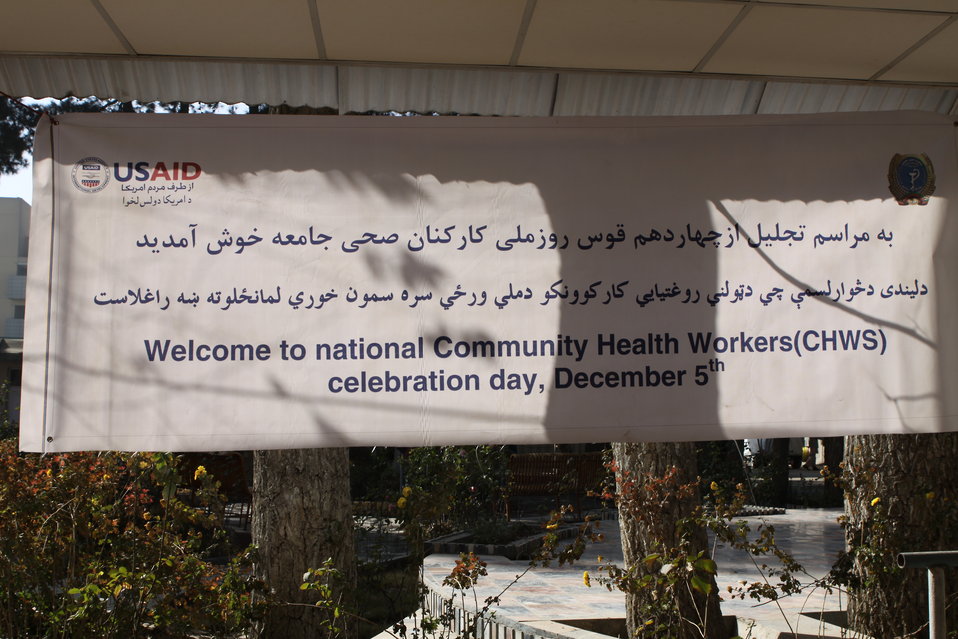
Community Health Workers Celebrated

Kabul, Afghanistan | December 5, 2010 — In support of the United Nations designated International Volunteer Day for Economic and Social Development, Afghanistan’s Ministry of Public Health celebrated its annual Community Health Worker Day today. Acting Minister of Public Health Dr. Suraya Dalil, USAID Senior Deputy Mission Director Robert Hellyer, other government officials, and international donors joined in recognizing the critical contribution of community health workers in Afghanistan and encouraging them to continue their voluntary support to their communities.
The event praised the contributions of the more than 22,000 volunteers throughout the country who deliver community level health-education, counseling, and services out of village health posts located in private homes. The Ministry of Public Health envisioned that community-based healthcare programs will actively encourage communities and families to adopt healthy lifestyles and behaviors, and provide families access to high quality and socially acceptable preventative medicine and life-saving services.
“We have 22,000 community health workers in Afghanistan that are able to implement the basic and standard medicines. They all have been trained through a job description,” said Minister Dalil. Addressing the health workers, she added, “I am proud and feel powerful that I have people like you.”
USAID-funded health projects collaborate closely with the Ministry of Public Health to improve the health and nutritional status of Afghans, provide quality primary healthcare, and promote healthy behaviors at the community and household-levels. USAID supported the training of more than 9,000 of the volunteer community health workers currently working in Afghanistan.
“On behalf of the American people, I congratulate the Community Health Workers for their diligence to gain the skills and knowledge necessary to serve their communities in this important role,” said USAID Senior Deputy Mission Director Hellyer. “USAID strongly supports community based health care and believes that quality community-based health services are essential to reaching Afghanistan’s Millennium Development Goals.”
To support the Basic Package of Health Services, USAID assisted in developing the community health worker training manual, helped train community health worker supervisors and master-trainers, facilitated in-service training, and produced and developed reporting tools, job aids, and education materials.